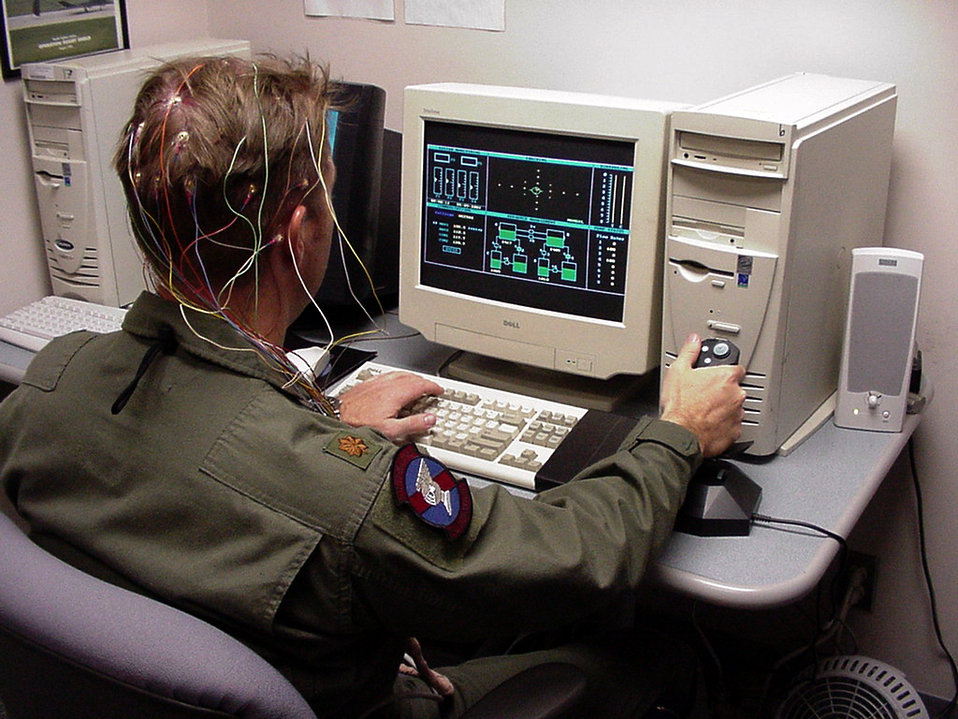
Sleep deprivation

HOLLOMAN AIR FORCE BASE, N.M. -- An F-117A Nighthawk pilot takes a computerized aviation simulation test during a research study into aviator fatigue.